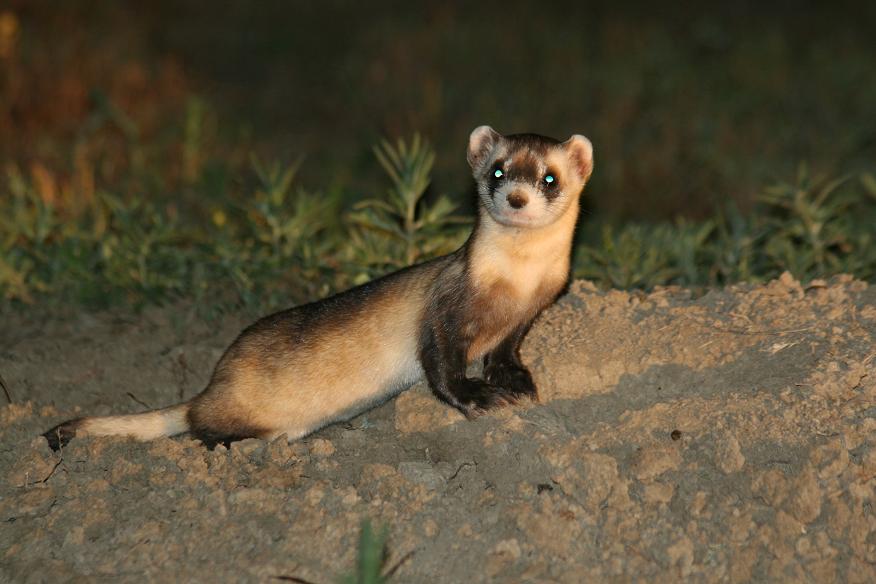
Black-footed Ferret

This endangered species was reintroduced on UL Bend National Wildlife Refuge (part of CMR) in 1994.